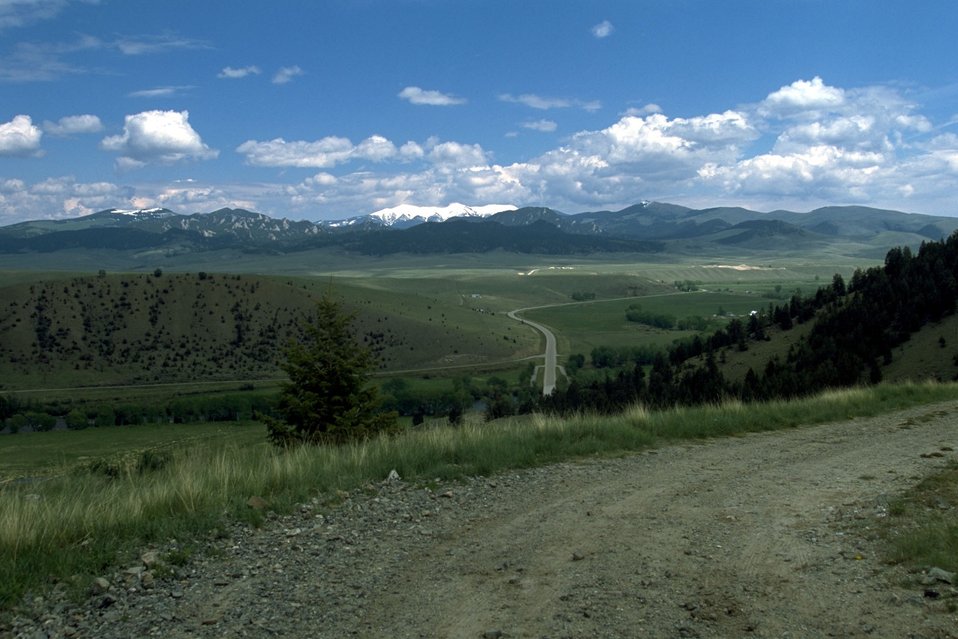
View of Humbug Spires Wilderness Study Area (WSA) with snow on the mountain in the background